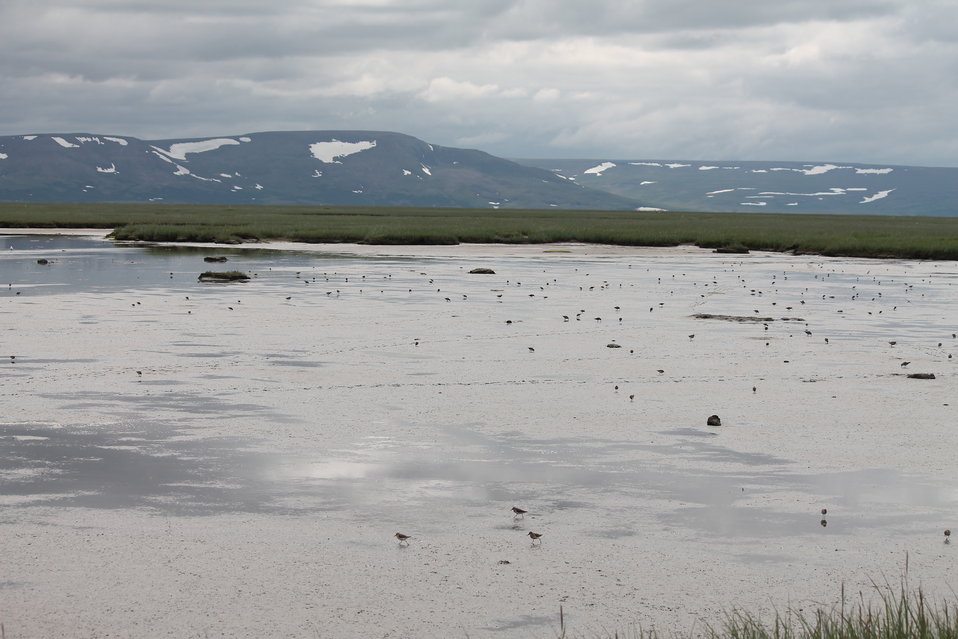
Shorebird galore

Large exposed mudflats are common in the coastal zone of Yukon Delta NWR. Some ponds along the coast are tidally influenced. At low tide the mudflats are exposed igniting a feeding frenzy among the shorebird species.

USFWS Yukon Delta NWR